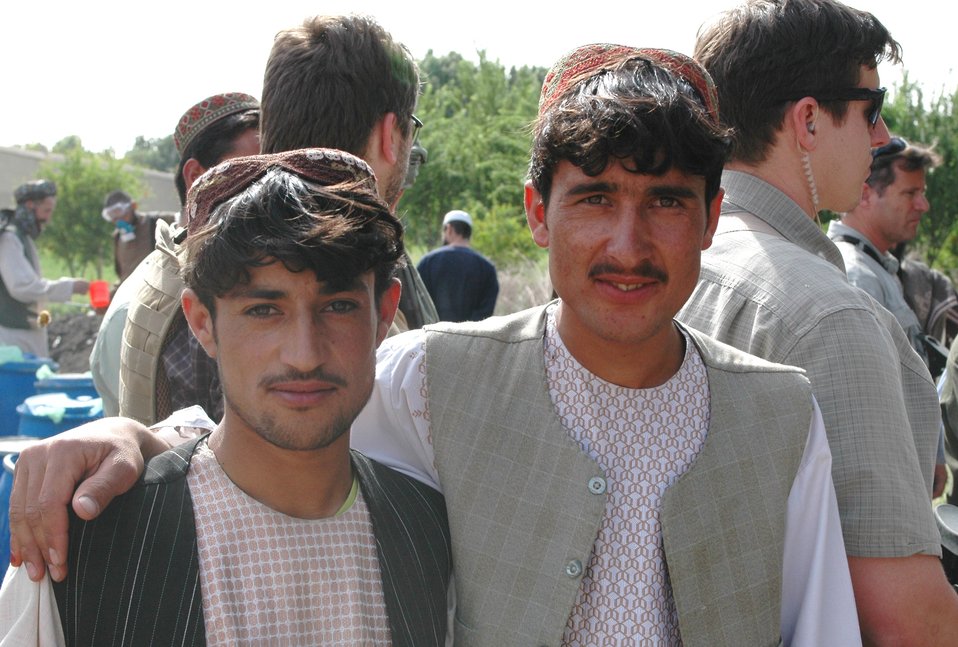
Dr Shah Visits Argandab April 10, 2010